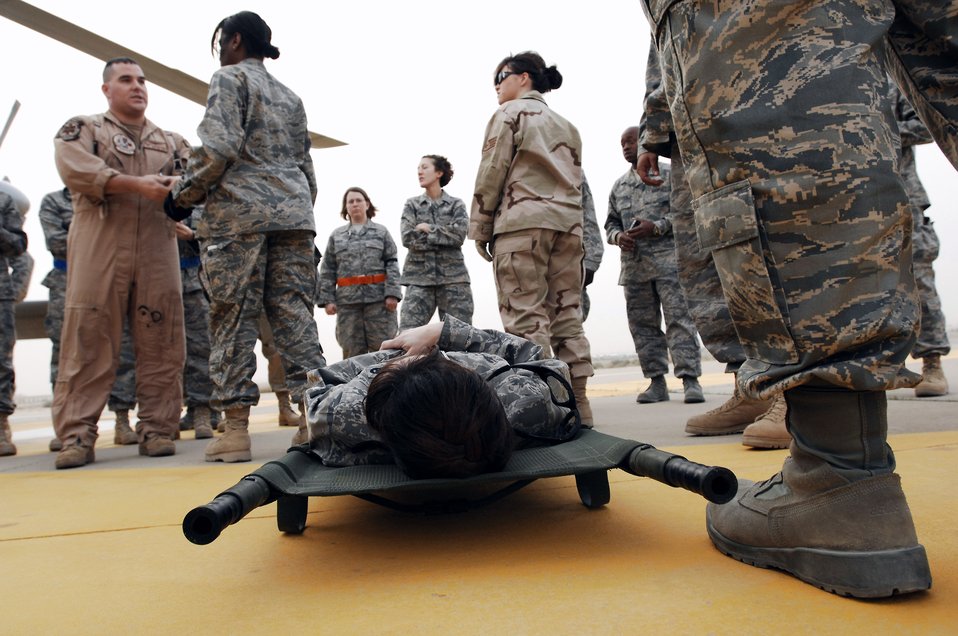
Litter training key to patient handling

Navy Petty Officer 2nd Class Clayton Deese instructs Airmen from the 386th Expeditionary Medical Group while Capt. Loree Lunsford waits on a litter to be transported during litter management system training on a Navy MH-60 Sierra Feb. 18 at a Southwest Asia air base. The training familiarized medics on the loading and extracting techniques of patients for medical evacuation missions in support of operations Enduring Freedom and Iraqi Freedom. Captain Lunsford is a nurse from the 386th EMDG.